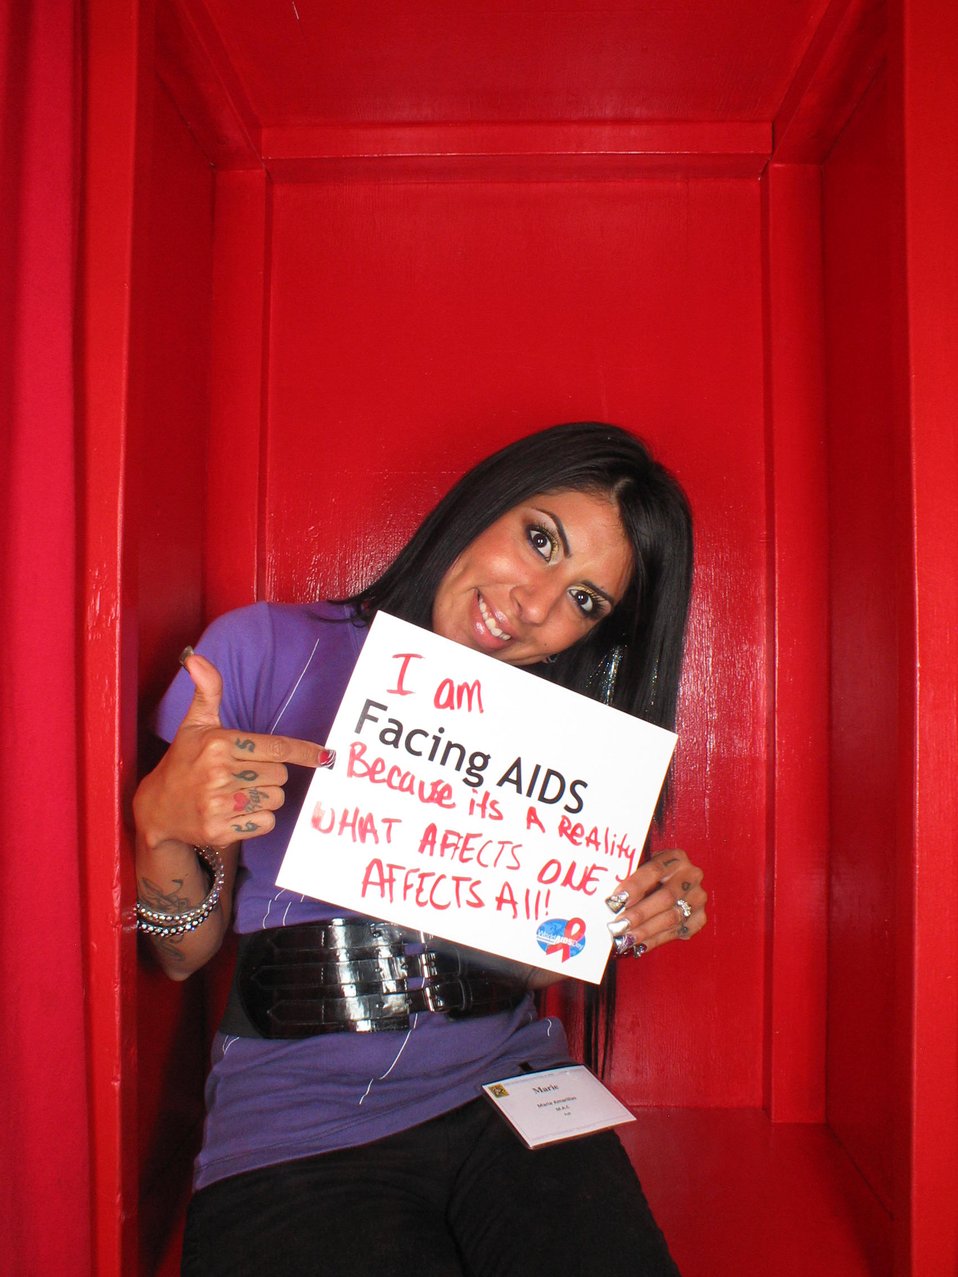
Facing AIDS because its a reality what affects one affects all.